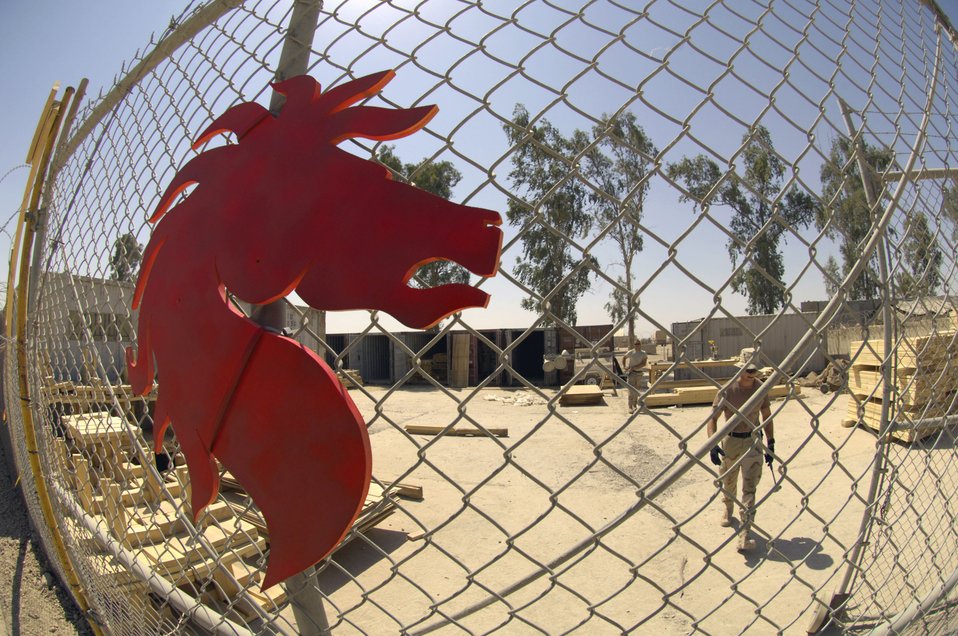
RED HORSE Airmen support Army in southern Baghdad

Airmen from the 557th Expeditionary RED HORSE Squadron scrounge for scrap material to cobble together a compound for securing equipment and material which will be used to build tactical operations centers June 22 at Forward Operating Base Kalsu, Iraq. The Rapid Engineer Deployable Heavy Operational Repair Squadron Engineers , or RED HORSE, Airmen are forward deployed from Balad Air Base, Iraq, to build four tactical operations centers for the Army's 2nd Brigade combat team, 3rd Infantry Division headquartered here. The 2/3 ID is currently running operations out of tents. The RED HORSE unit, made up of Air Guard, Reserve and active-duty Airmen, was requested by the Army to come into this